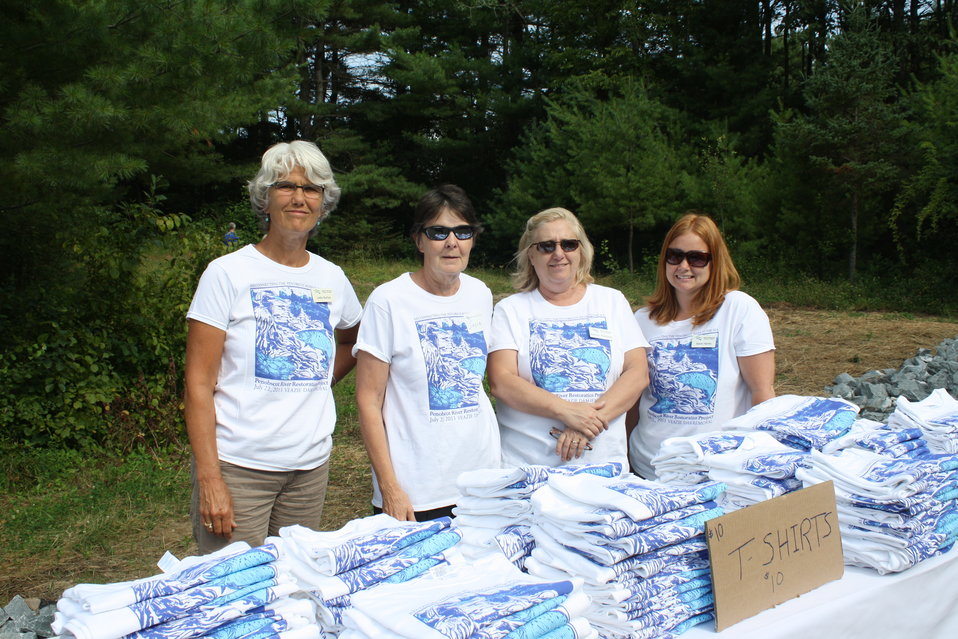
Veazie Dam Removal

Members of the Natural Resources Council of Maine show off the Penobscot River Restoration Project T-shirts.